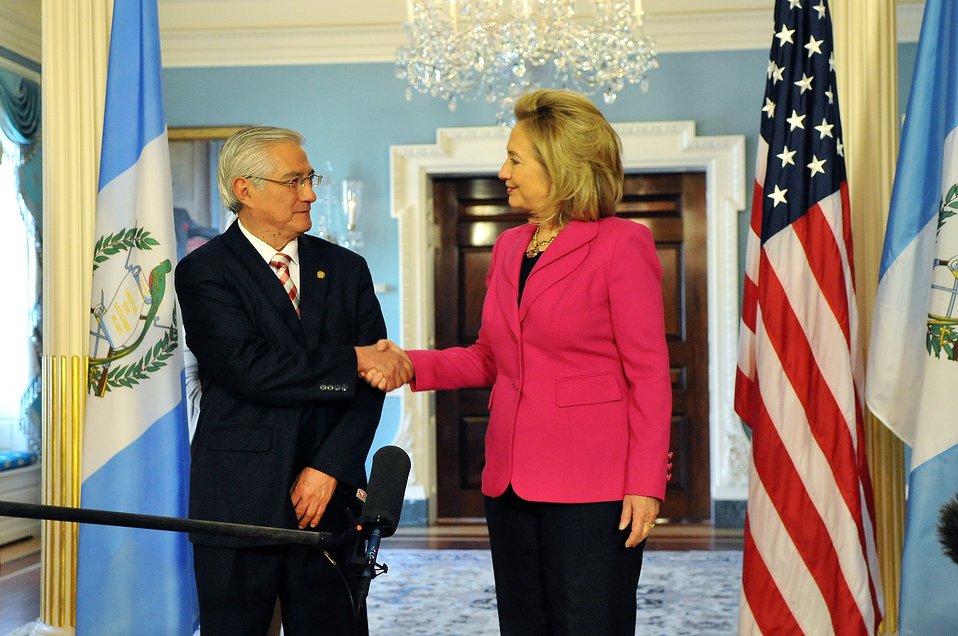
Secretary Clinton Shakes Hands With Guatemalan Foreign Minister Rodas

U.S. Secretary of State Hillary Rodham Clinton shakes hands with Guatemalan Foreign Minister Rodas after their bilateral meeting at the U.S. Department of State in Washington, D.C., on January 3, 2011.